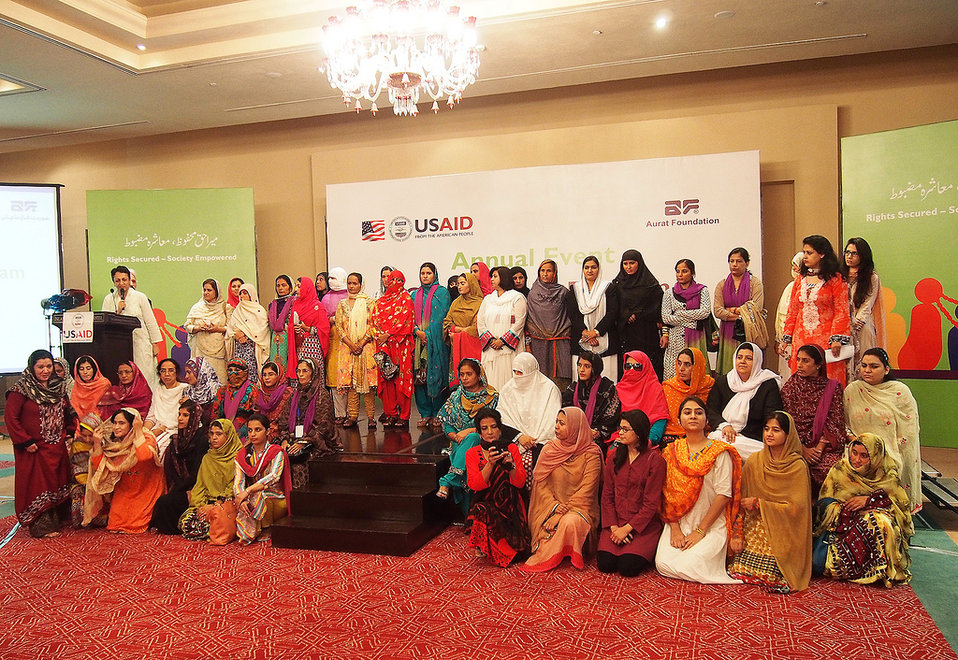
Gender Equity Program, Pakistan

USAID and Aurat Foundation annual event in Islamabad, Sept. 20, 2013